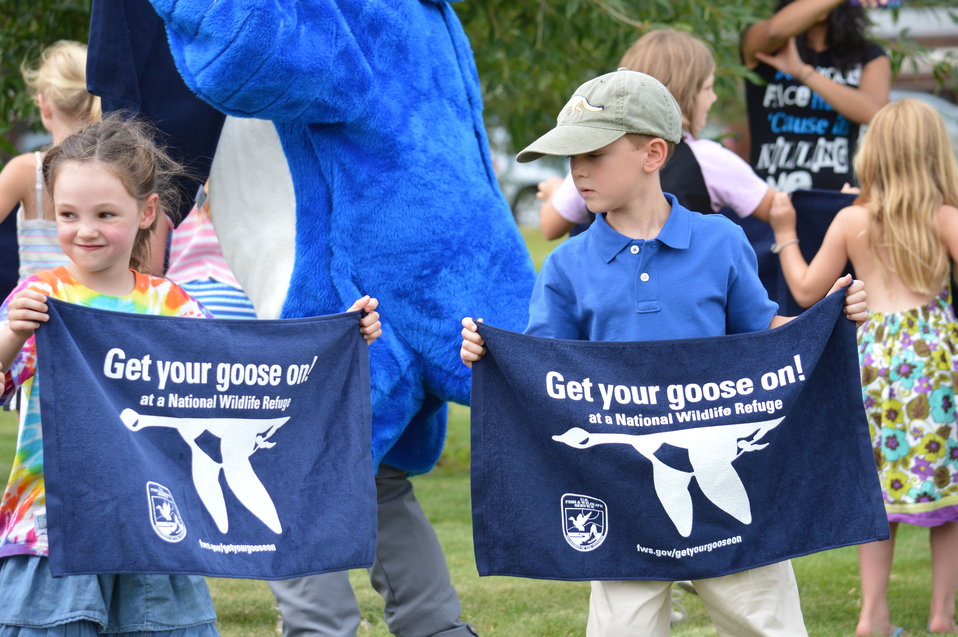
Get Your Goose On! - National Elk Refuge Style

On August 10, 2012 the U.S. Fish and Wildlife Service and Partners celebrated the 100 year anniversary of the establishment of the National Elk Refuge. In these photos, young attendees, along with Puddles the Blue Goose and the National Elk Refuge's mascot, showed us how to Get Your Goose On! with style.